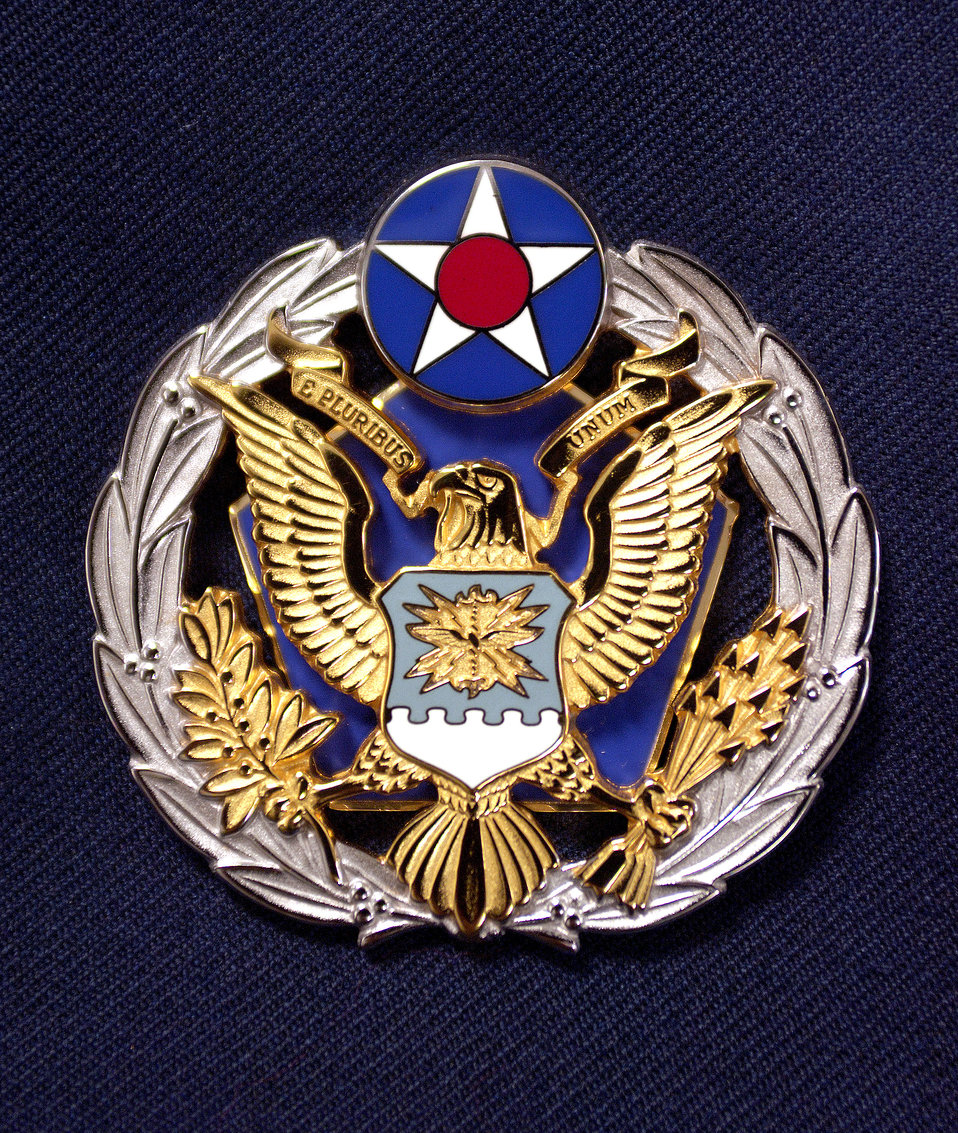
New Air Staff badge recognizes Pentagon assignment

Airmen assigned to the Pentagon will soon have the option to wear the new Headquarters Air Force badge. The basis for the badge is Air Force heritage and the design incorporates many elements from the Department of the Air Force Seal.